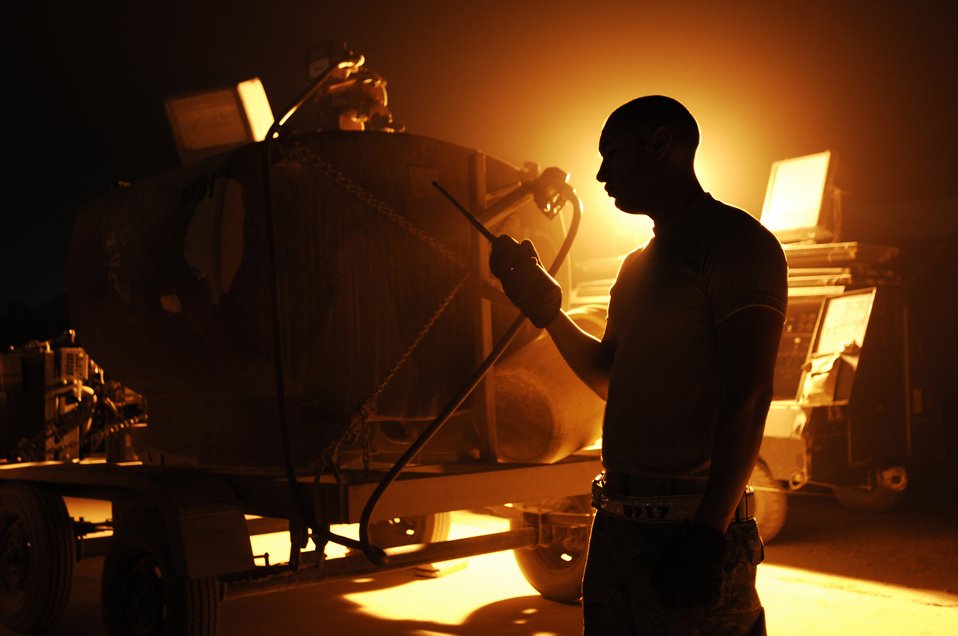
Who's next?

Senior Airman Fred Cruz communicates with his unit using a land mobile radio Sept. 24 at Joint Base Balad, Iraq. He refuels aerospace ground equipment, including mobile generators, flood lights and other equipment on the flightline. He is deployed from Shaw Air Force Base, S.C.